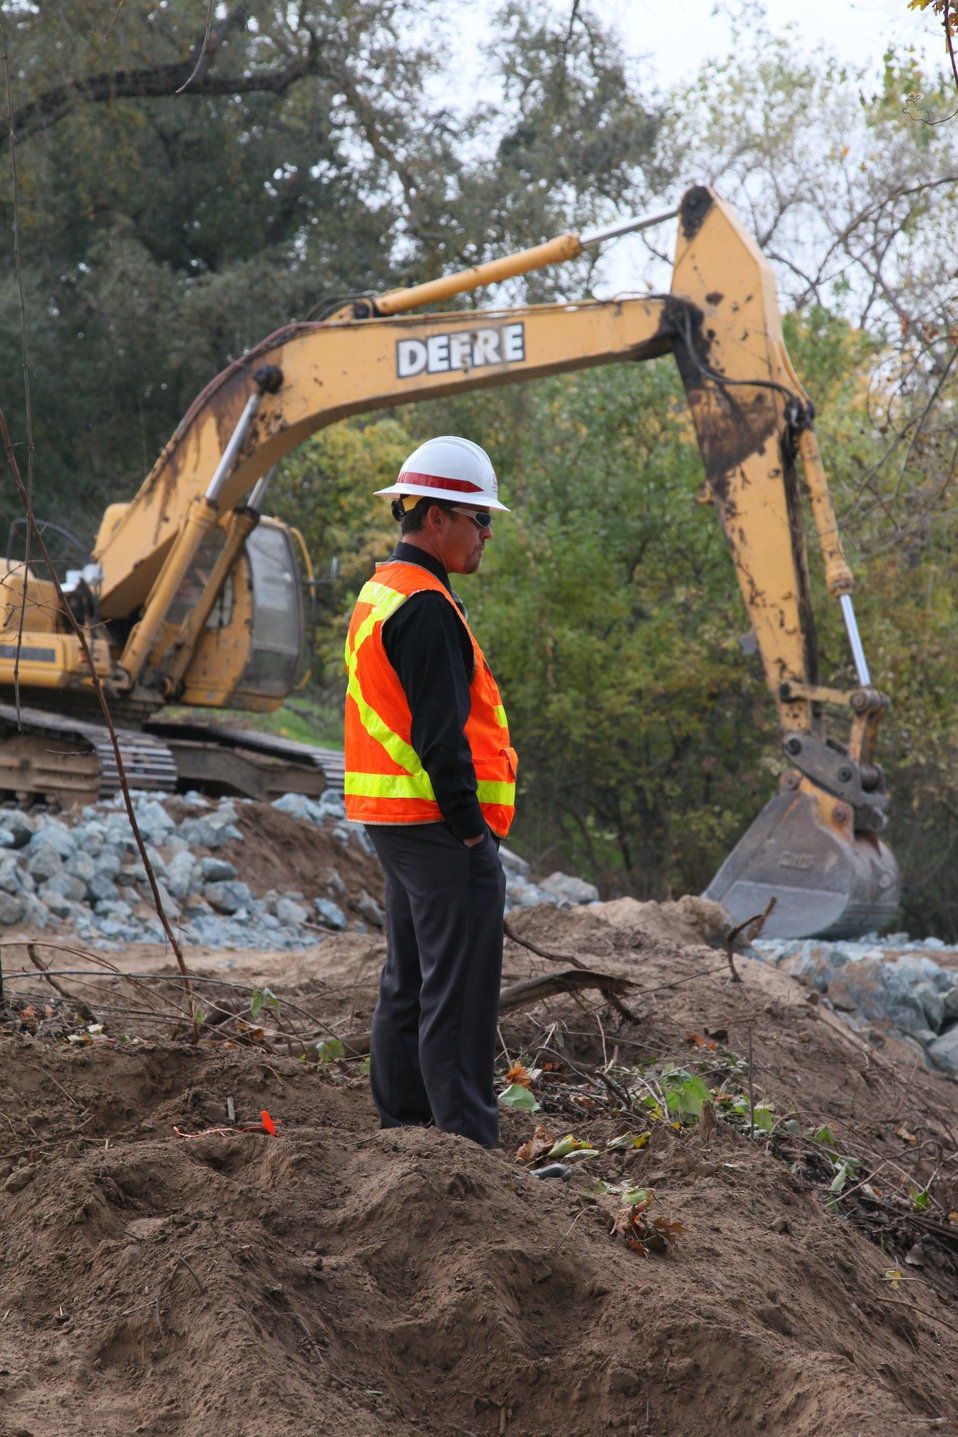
Dave Cook oversees erosion repair work

U.S. Army Corps of Engineers Sacramento District project manager Dave Cook watches as large rock called rip-rap is maneuvered to an erosion repair site along the American River’s south bank near Watt Avenue in Sacramento, Calif., Nov. 18, 2011. Cook is overseeing repairs of two nearby critical erosion sites between November 2011 and July 2012. The work is part of the Sacramento River Bank Protection Project to reduce flood risk for the Central Valley.